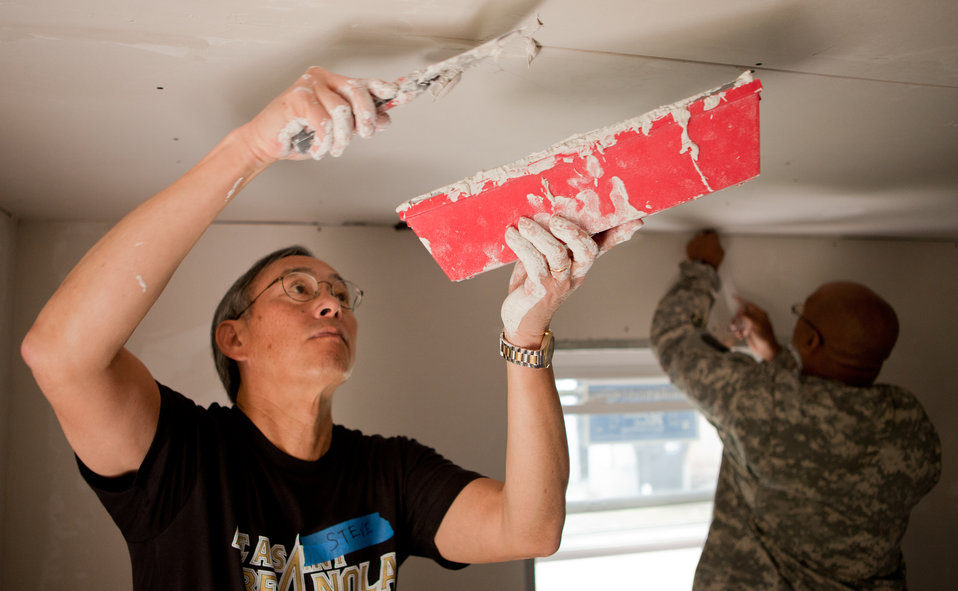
Veteran's Day in New Orleans 7 of 10

Sec. Chu mudding the ceiling.